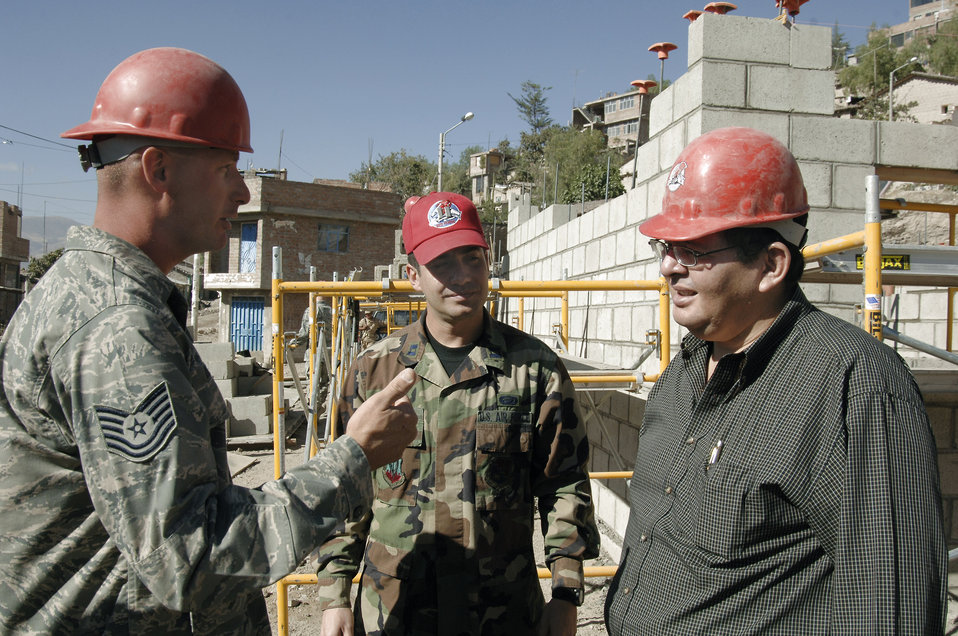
Peru's chief of staff sees 'New Horizon'

Tech. Sgt. Chris Belknap describes the construction progress of a clinic the 820th RED HORSE Squadron engineers are building July 13 in San Cristobal, Peru, to Dr. Luis Cabena, the chief of staff to the Peruvian Ministry of Defense. The engineers are part of a task force supporting New Horizons-Peru 2008, a U.S. and Peruvian effort to bring quality-of-life improvements to the people of Peru. Sergeant Belknap is the project manager.